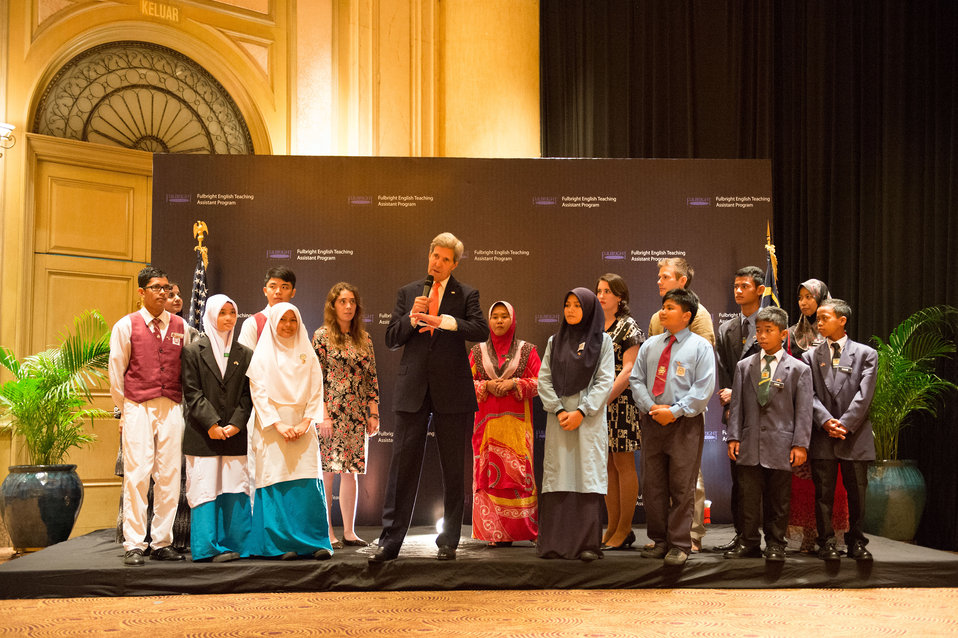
Secretary Kerry Participates in a Fulbright English Teaching Assistants and Students Event

U.S. Secretary of State John Kerry participates in a Fulbright English teaching assistants and students event in Kuala Lumpur, Malaysia, on October 11, 2013.